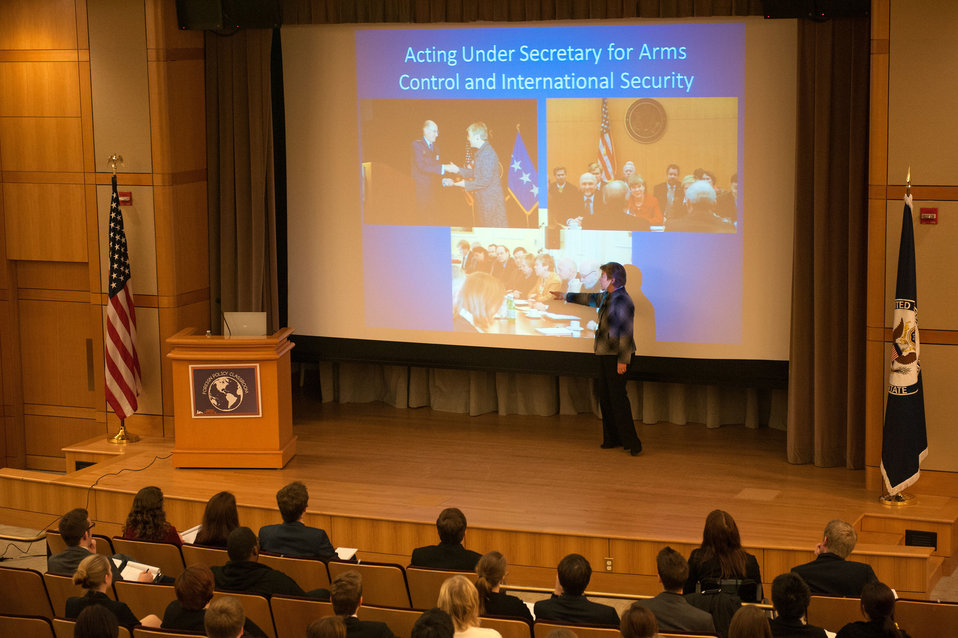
Acting Under Secretary Gottemoeller Participates in a Foreign Policy Classroom

Acting Under Secretary of State for Arms Control and International Security Rose Gottemoeller participates in the State Department-sponsored Foreign Policy Classroom at the U.S. Department of State in Washington, D.C., on February 27, 2013.